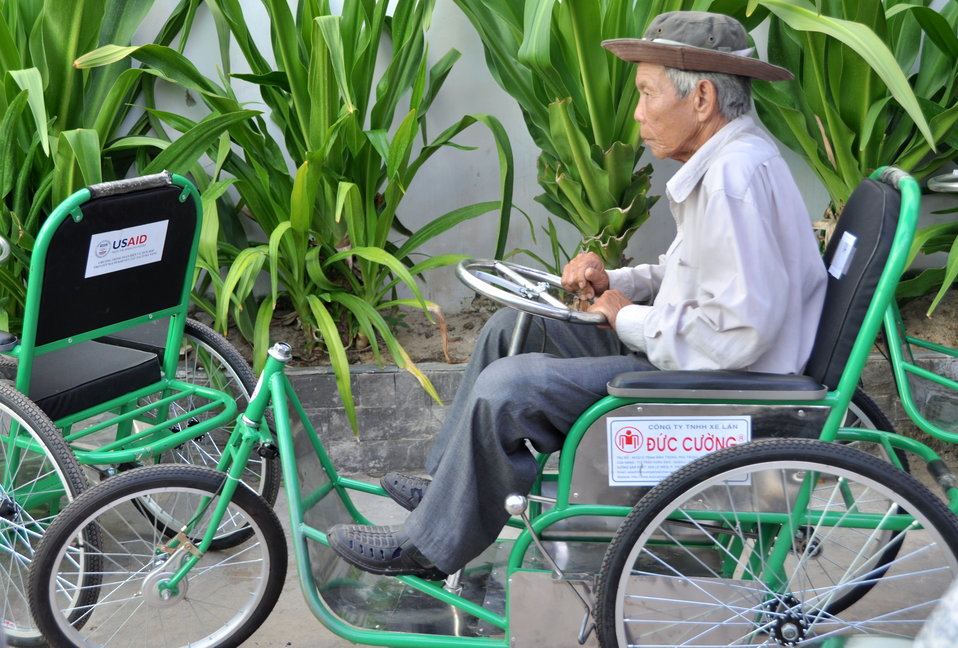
USAID Project Supports Rehabilitation Department for Children and Wheelchair Distribution in Danang

Beneficiaries in Danang, Vietnam, receive wheelchairs.